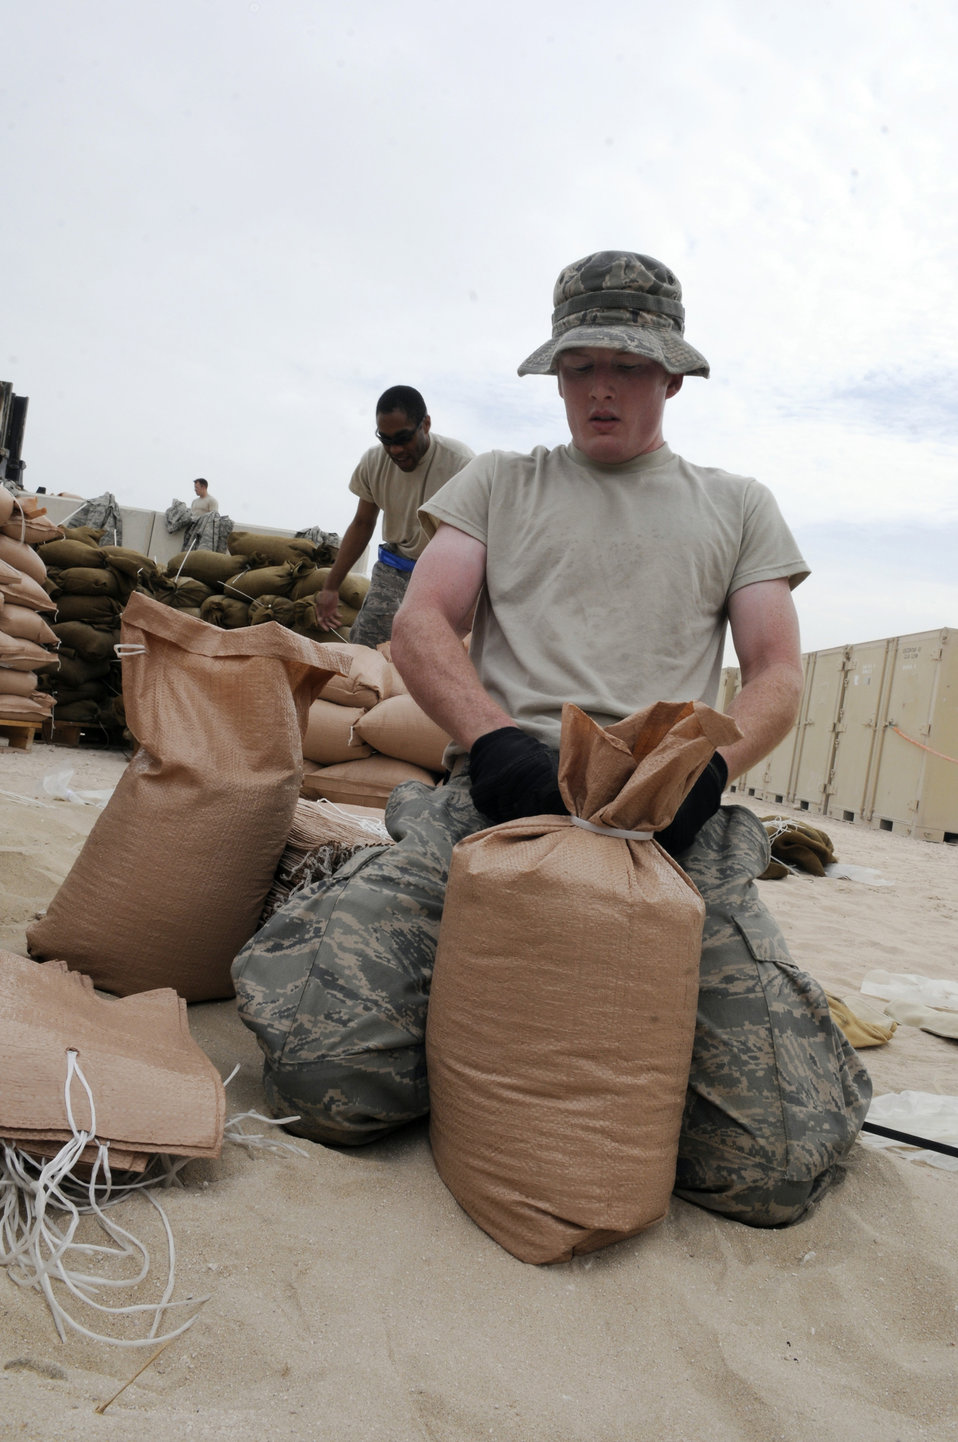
Working in the sand

Senior Airman Kyle Edwards, assigned to the 379th Expeditionary Communications Squadron, uses zip ties to close sand bags Nov. 4 at an air base in Southwest Asia. The sandbags will be used to fortify emergency bunkers. Airman Edwards, from Stanwood, Wash., is deployed from Robins Air Force Base, Ga., in support of operations Iraqi Freedom and Enduring Freedom and Joint Task Force-Horn of Africa.